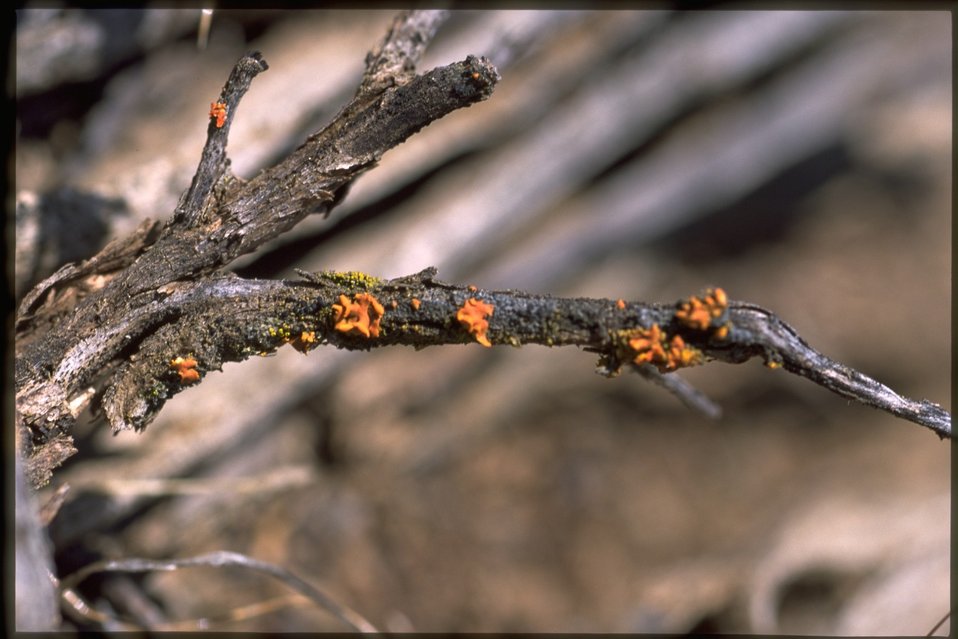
Lichen on tree branch.